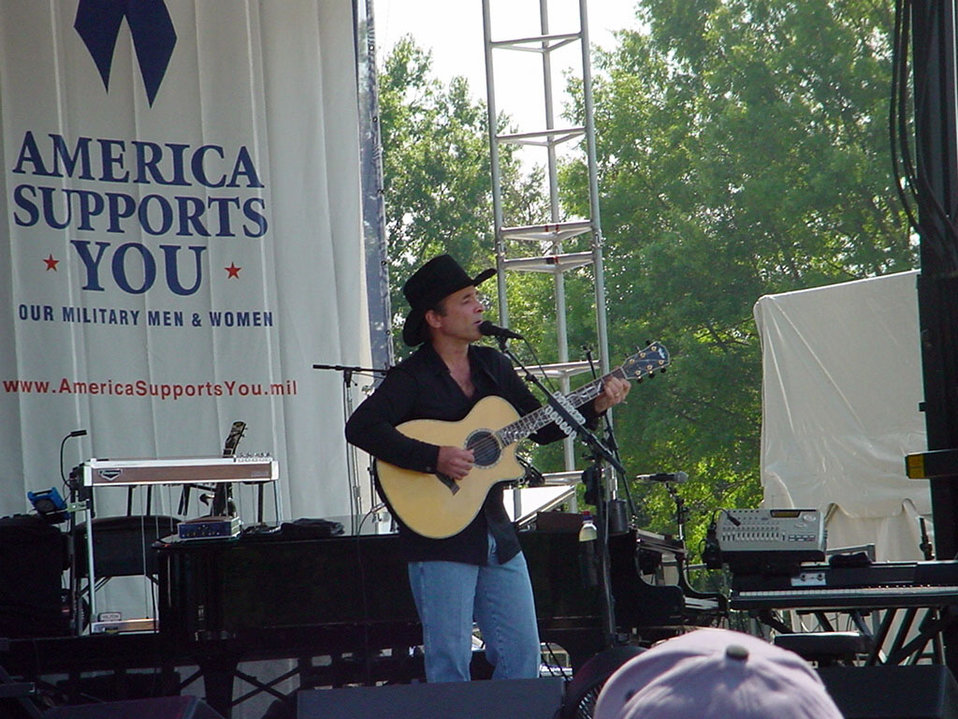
Freedom Walk

WASHINGTON - Country singer Clint Black treated walkers to a free musical tribute to the troops at the conclusion of the first